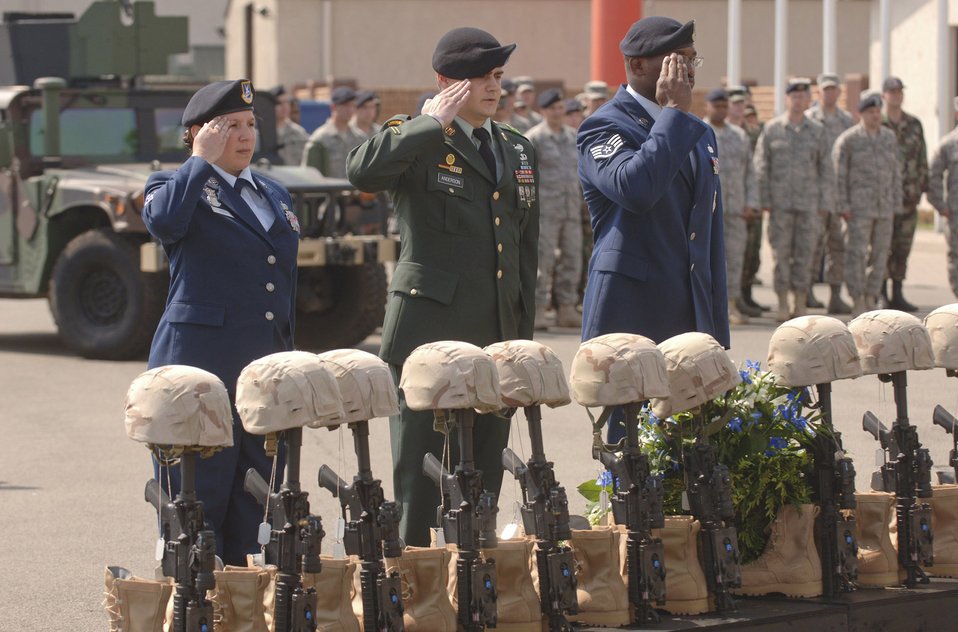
Security forces memorial

A wreath-laying detail renders a salute to a memorial for the 15 Air Force and Army security forces who were killed in 2007 while fighting the war on terrorism during a ceremony at Ramstein Air Base, Germany.